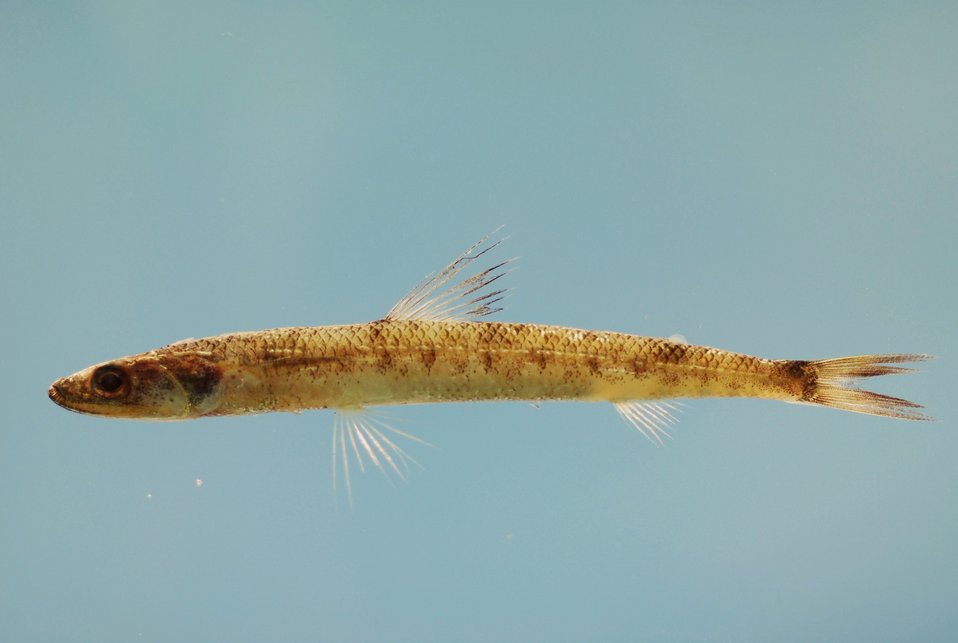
Smallscale lizardfish ( Saurida caribbaea )